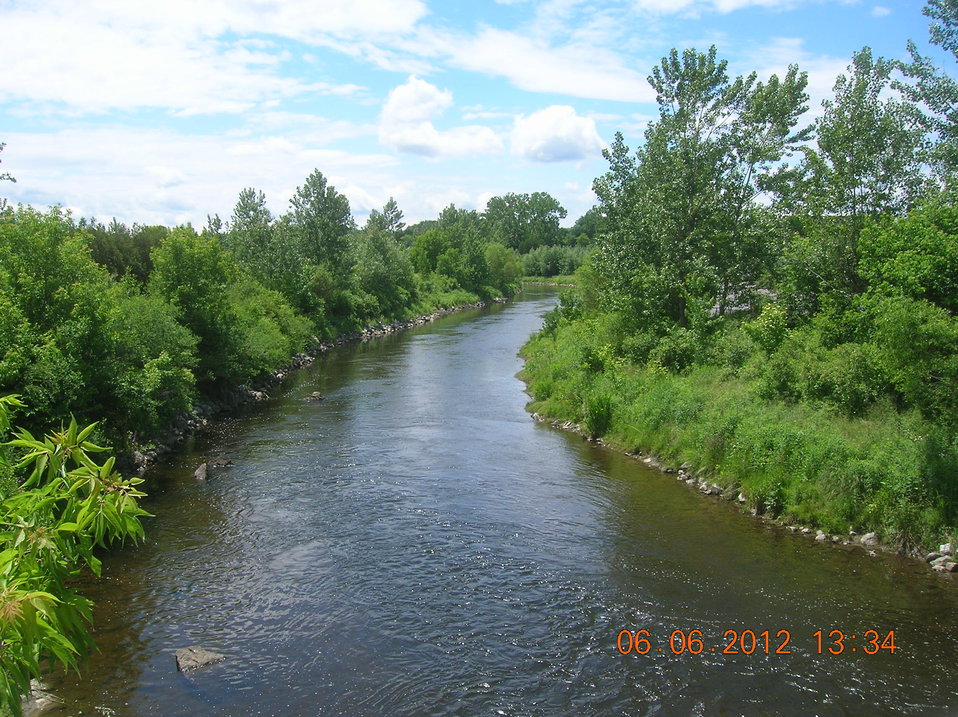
June 2012, 'AFTER' view of river cleanup from Lyman Street

This was part of the '1.5 mile reach' cleanup and shows the healthy comeback of native plants along the Housatonic River. See the two next photos for the transformation over time.